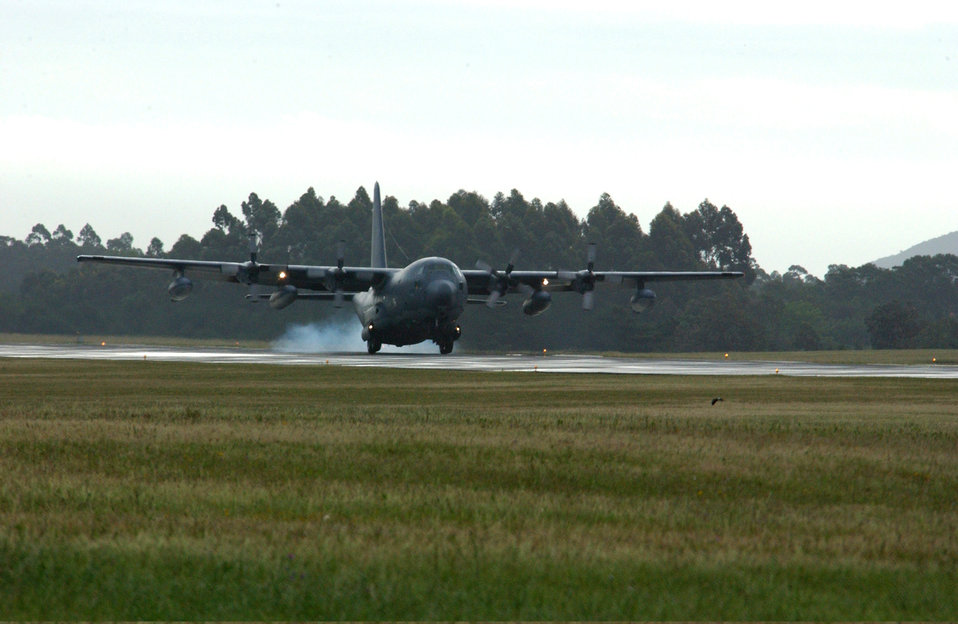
Reservists arrive in Uruguay for exercise

PUNTA DEL ESTE, Uruguay -- An MC-130P Combat Shadow from Eglin Air Force Base, Fla., arrives here Nov. 9 for participation in Unitas 2004. The exercise involves navies from the United States, Spain, Brazil, Uruguay and Argentina, plus the U.S. Coast Guard and U.S. Air Force.